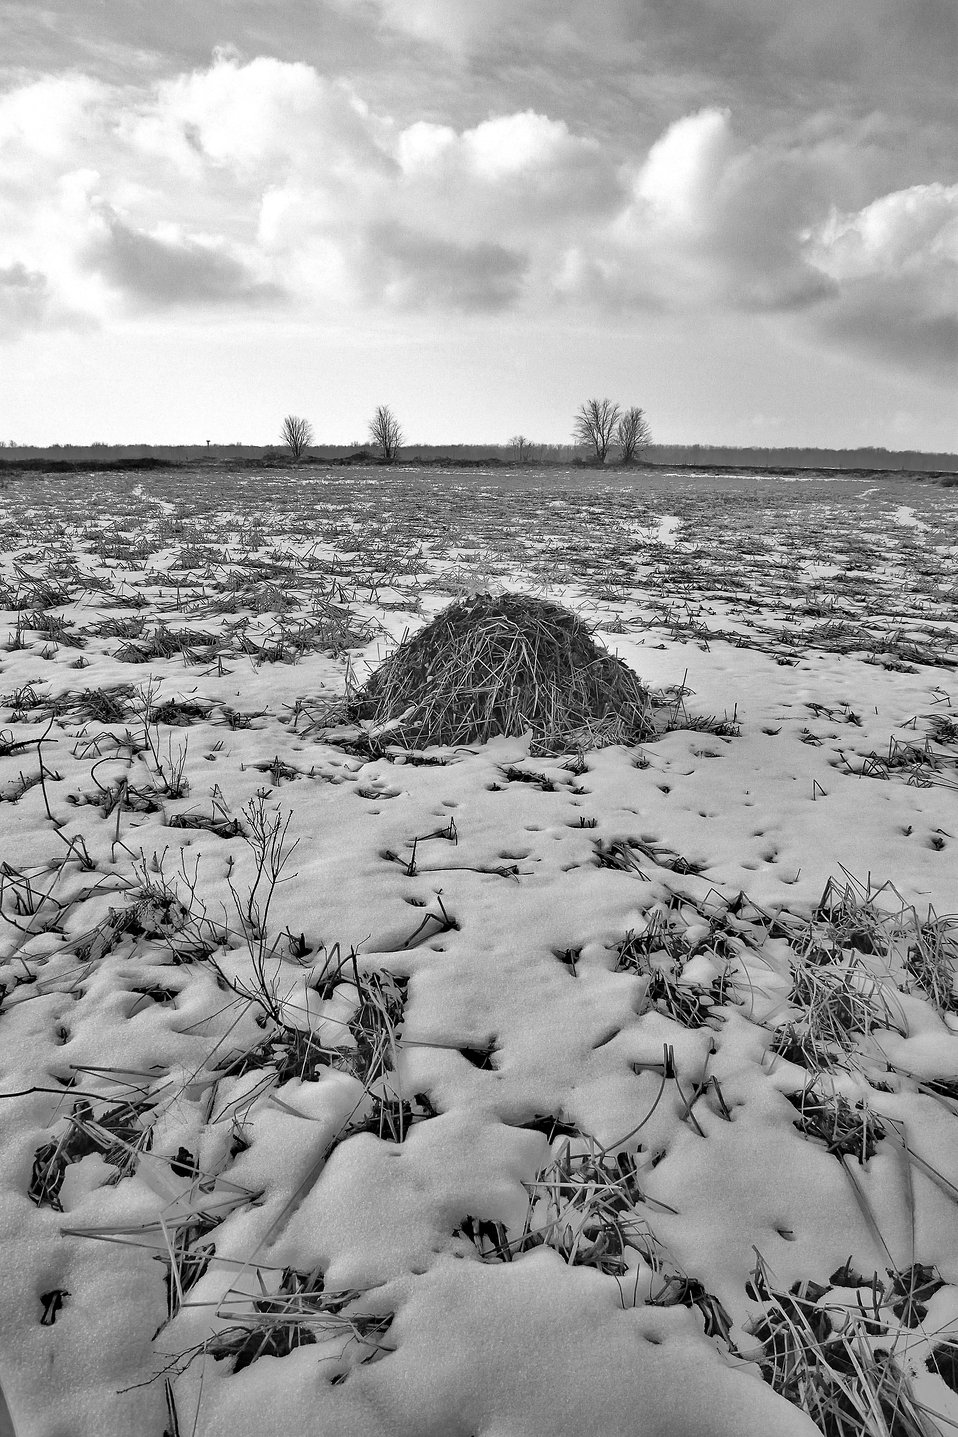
Muskrat lodge at Missisquoi National Wildlife Refuge.